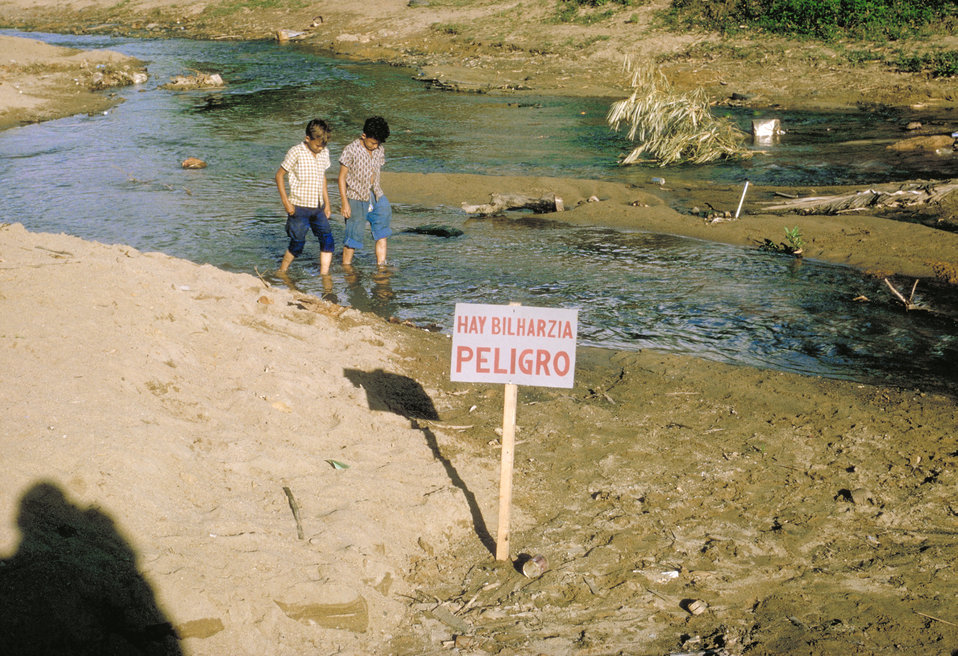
These boys were wading in a stream in Puerto Rico despite a sign on bank stating, "Danger - There is Bilharzia".